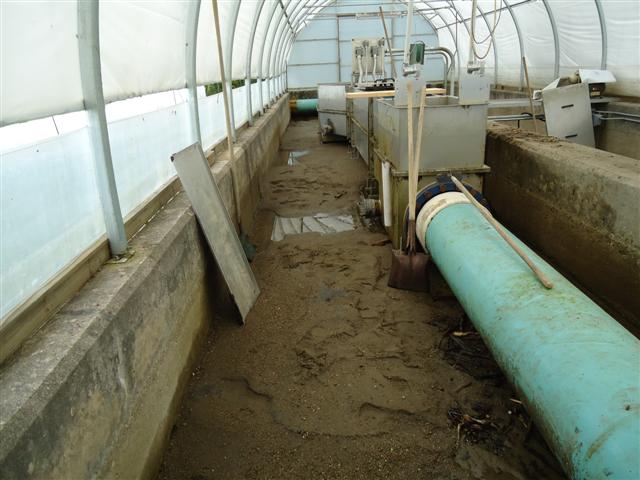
Storm damage at Eisenhower National Fish Hatchery in Vermont

Sediment in water treatment trough.